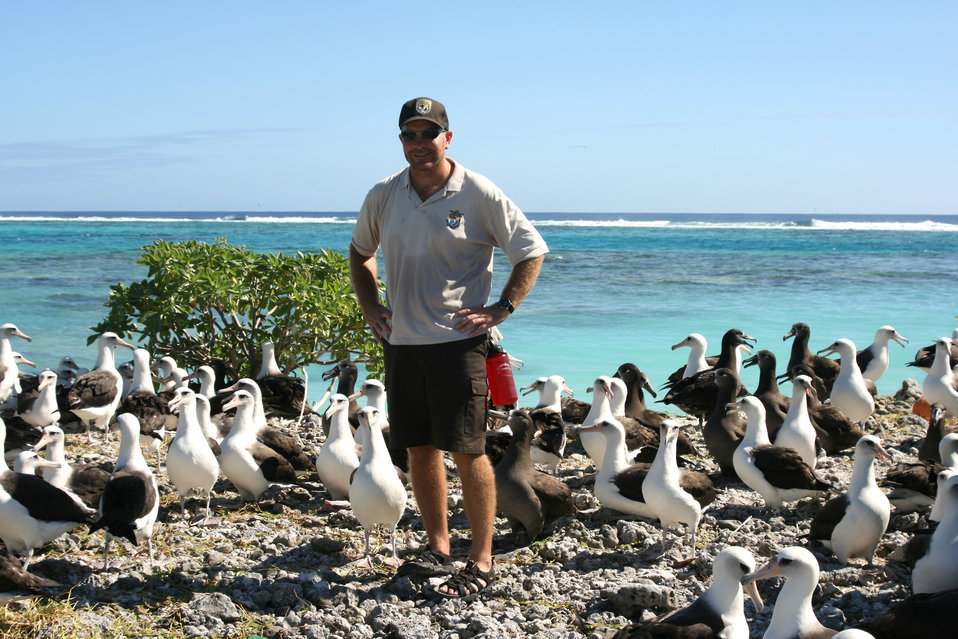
Pete Leary, Wildlife Biologist at Midway Atoll National Wildlife Refuge in the Papahanaumokuakea Marine National Monument, joined the Navy immediately after high school and went through the U.S. Navy Scuba Dive School, one of the most challenging and rewarding experiences of his military service. He says he is proud of his years in the Navy, but he 'can’t think of a better place to be than where I am, doing seabird conservation and habitat restoration on a beautiful little island.'